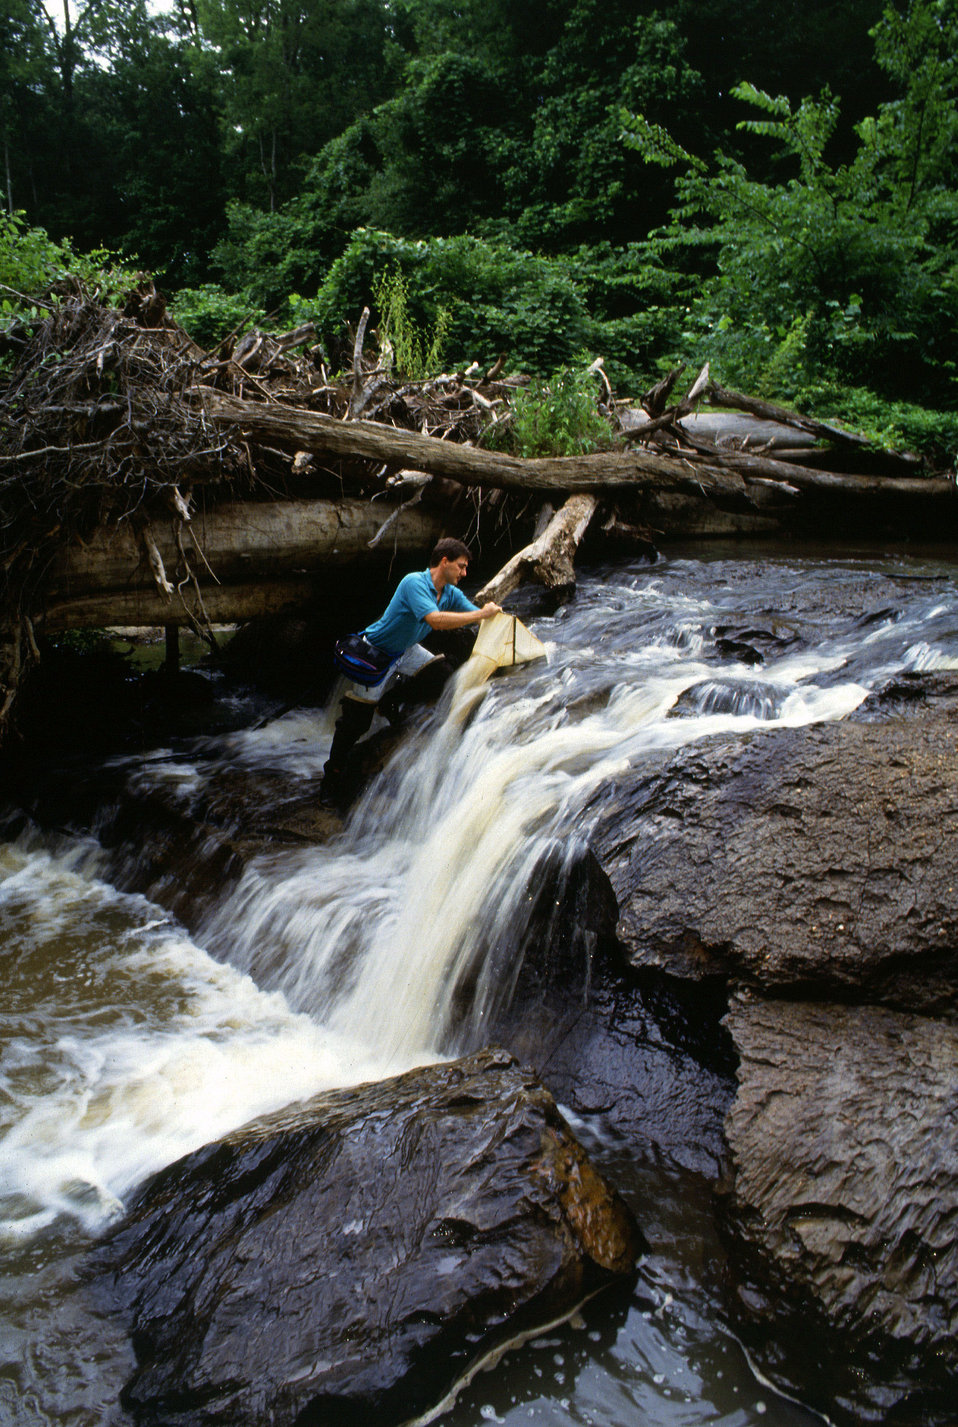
Small waterfalls called headcuts gouge stream channels ever deeper as they move upstream. The variety and vigor of the insects that U.S. Department of Agriculture (USDA) Agricultural Research Service (ARS) biologist Sam Testa collects will reflect the level of environmental harshness or pollution in this stream.